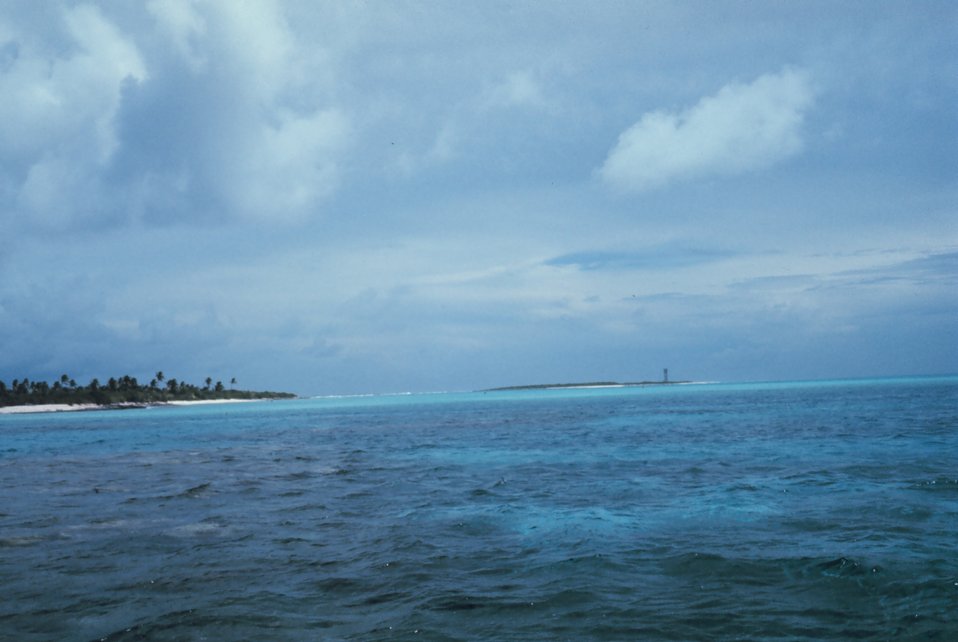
A low lying atoll with a navigation aid on a smaller outlying island.